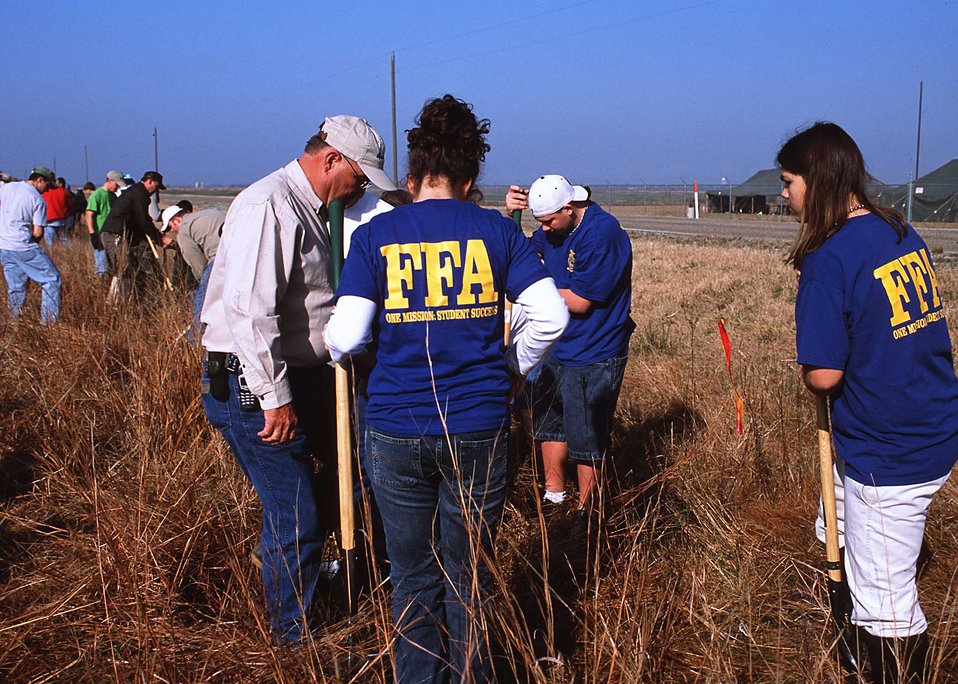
Earth team volunteers of NRCS help transplant native prairie plants from a roadside near Gueydan, Louisiana, to a restored wetland nearby.